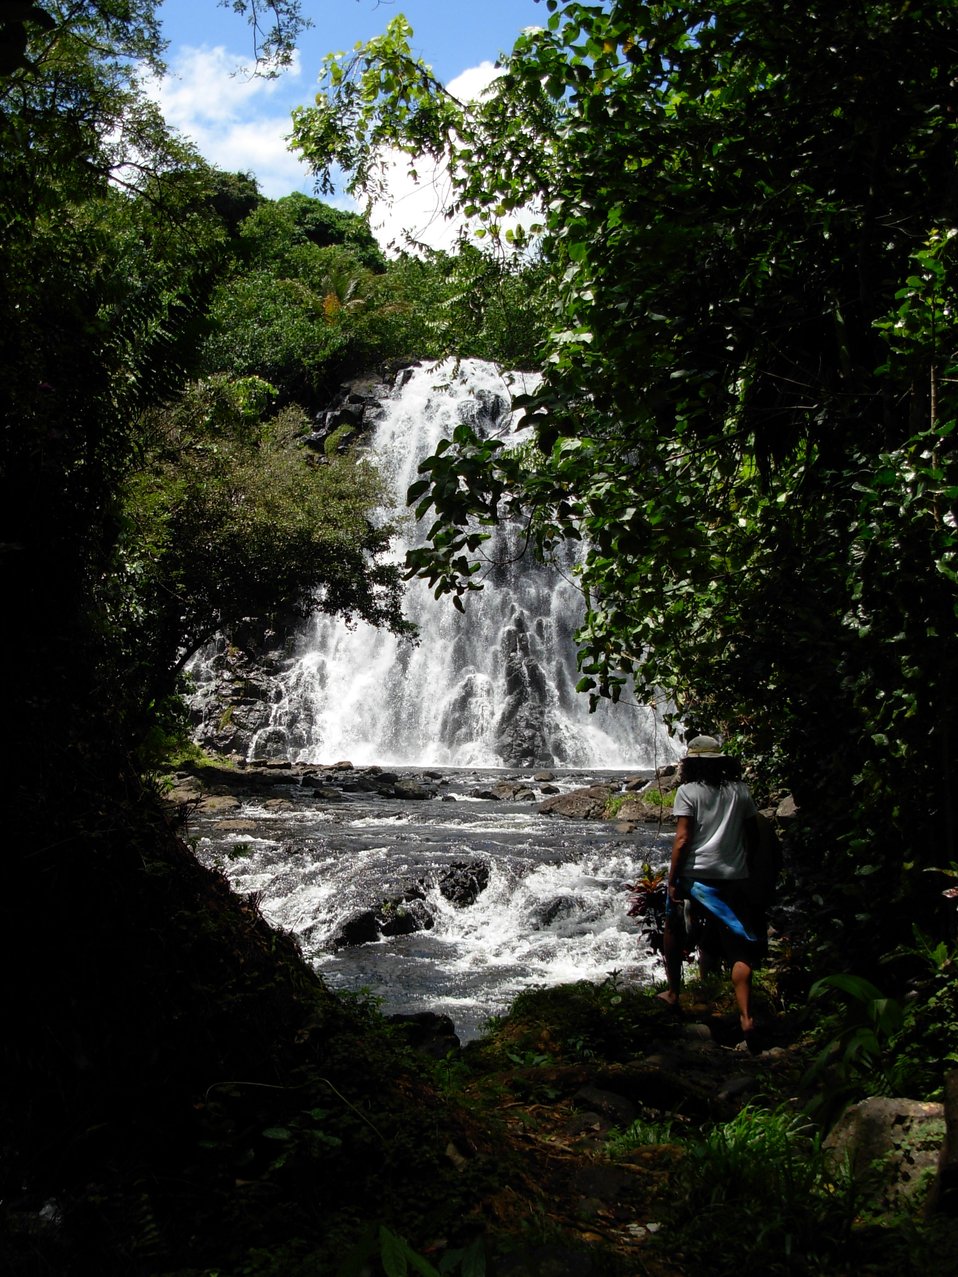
Keprohi (also spelled Kepirohi) Waterfall